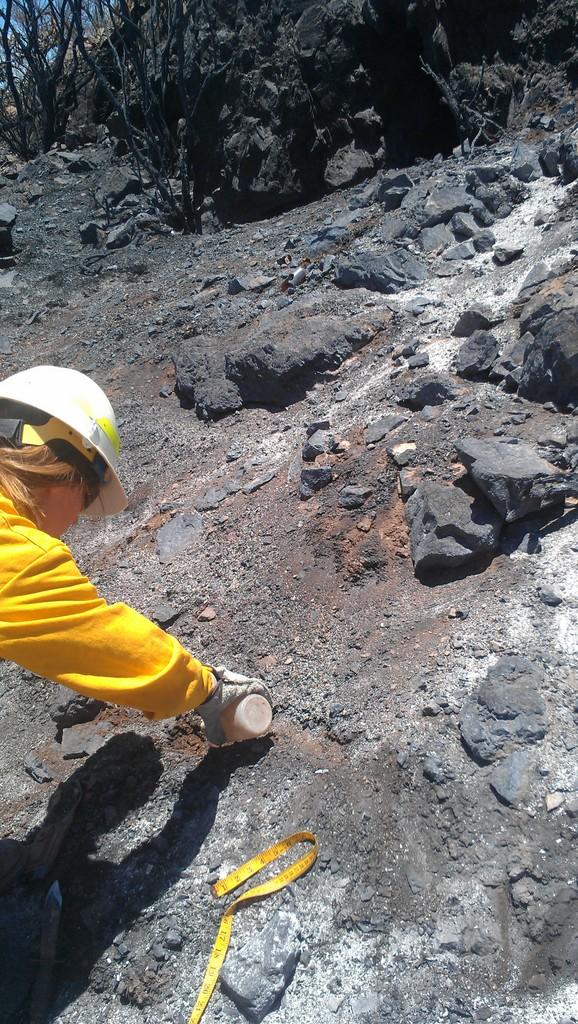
A soil scientist with the Burned Area Emergency Response (BAER) team tests for water penetration on at a high severity burn area. The Silver Post Fire response has the Burned Area Emergency Response (BAER) team beginning operations to seed acres of high burn severity and to mulch additional acres. Seeding reduces effects to downstream life, property, and infrastructure by reducing erosion and runoff. Areas of high burn severity are to be seeded with a quick germinating, non-persistent annual cereal barley that would provide rapid ground cover. A small percentage of native perennial species would also be included to give the burned area a jump start in natural recovery, and provide for long-term ground cover. Mulch is the most effective treatment for controlling erosion and runoff, as it provides immediate ground cover. Mulch also assists in stabilizing soil in and around these areas.